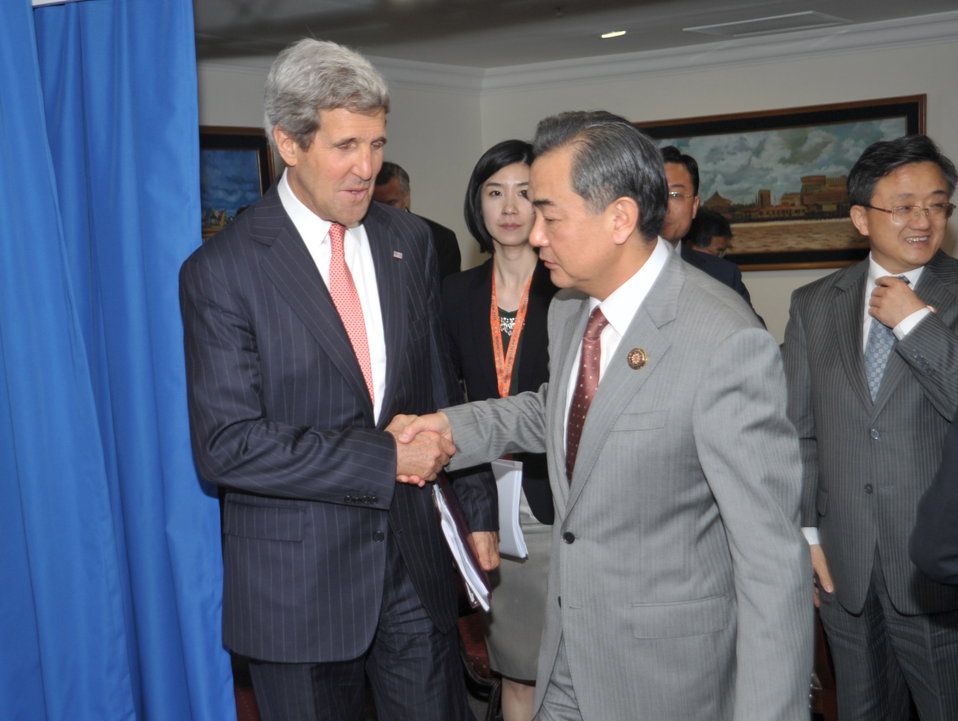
Secretary Kerry Says Goodbye to Chinese Foreign Minister Wang

U.S. Secretary of State John Kerry says goodbye to Chinese Wang Yi after a bilateral discussion at the ASEAN ministeral meeting in Bandar Seri Begawan, Brunei, on July 1, 2013.